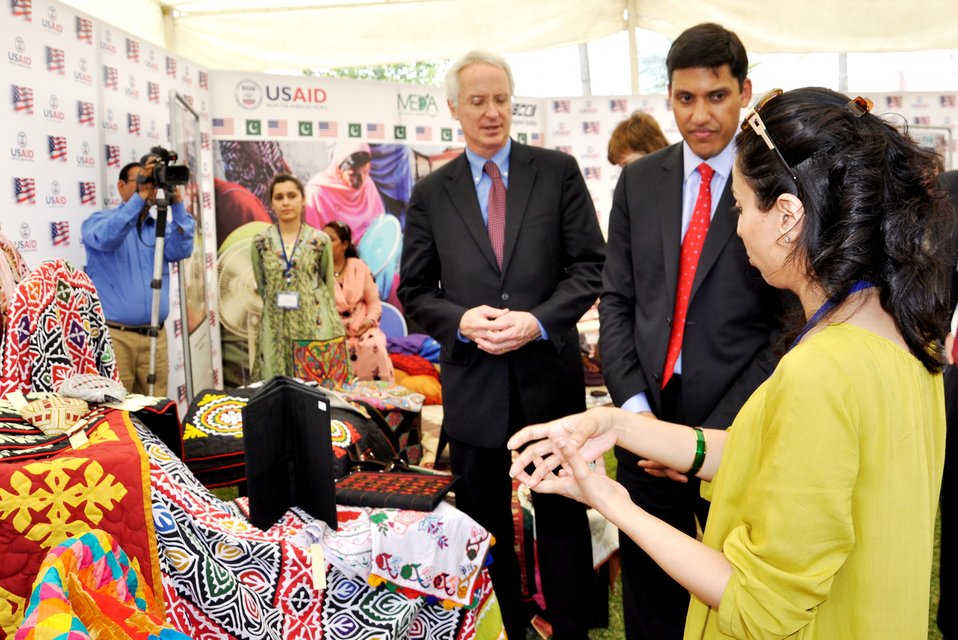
Dr. Rajiv Shah visiting Entrepreneurs project stalls